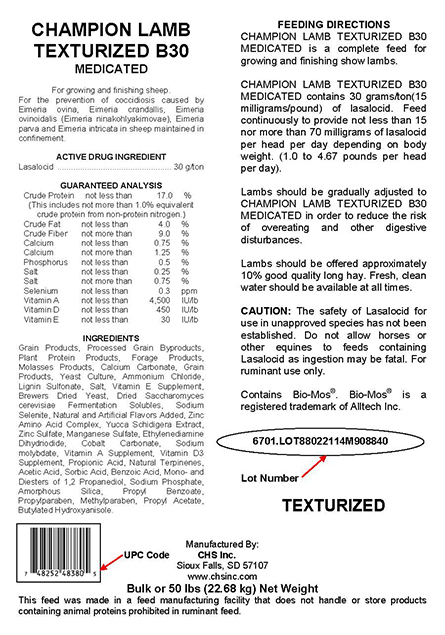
RECALLED – Lamb/Sheep Feed

June 4, 2014 – Product Recall – PGG/HSC Feed Company LLC issues voluntary recall of Champion Lamb Texturized feed B30, Lot-88022114M908840.